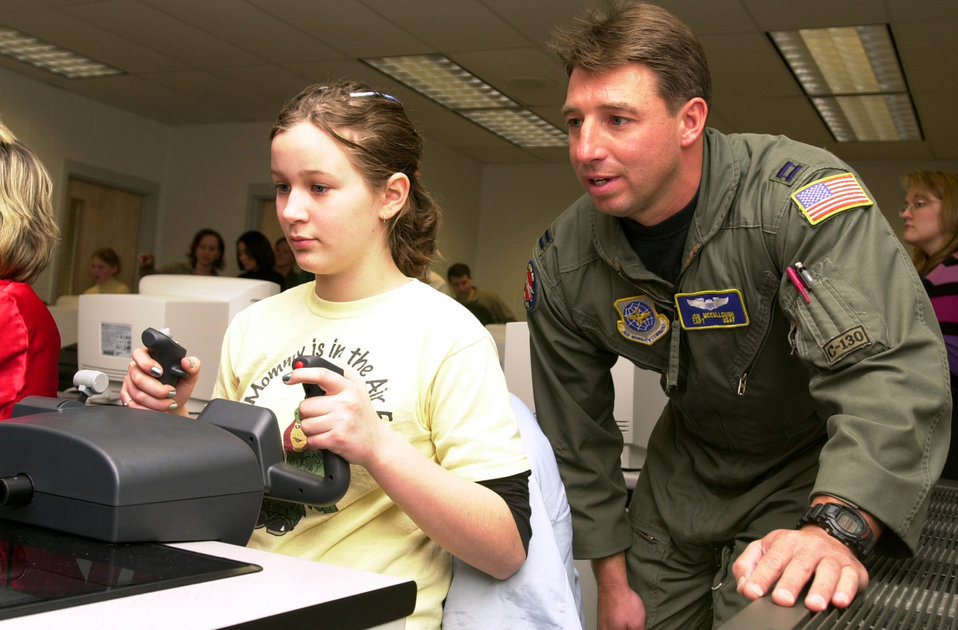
Starbase teaches children how to fly

MARTINSBURG, W.Va. (AFPN) -- Fifth-grader Catherine Newcome, at the yoke, gets a feel for flying a small plane on a computer simulator during a National Guard Starbase exercise in Martinsburg, W.Va. Capt. Jon McCullough, a C-130 Hercules pilot in the West Virginia Air National Guard, offers some helpful hints while watching her progress.